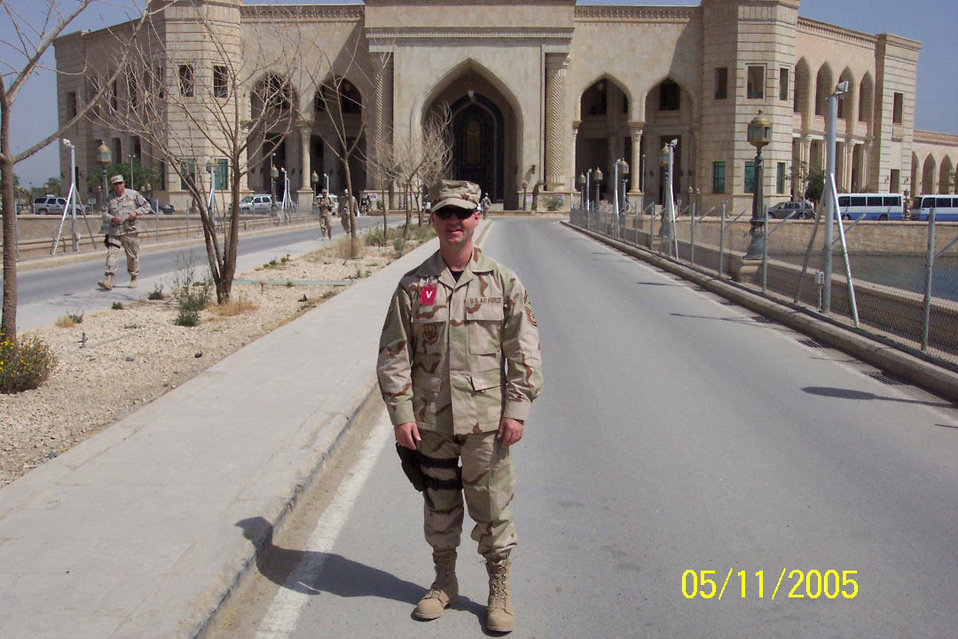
Graham Smith--Mountain-Prairie Region

Graham Smith is the Chief, Office of Diversity and Civil Rights for the Mountain-Prairie Region. He is a retired Air Force Chief Master Sergeant with 27 years of military service to his country.